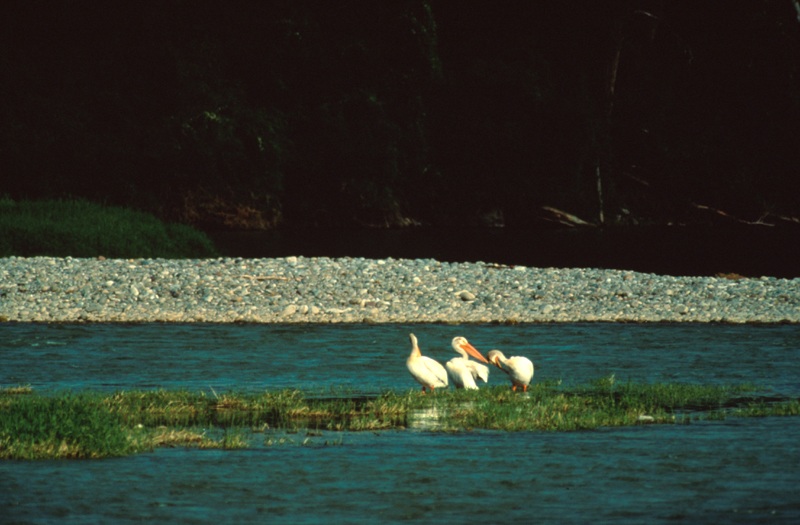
South Fork of the Snake River